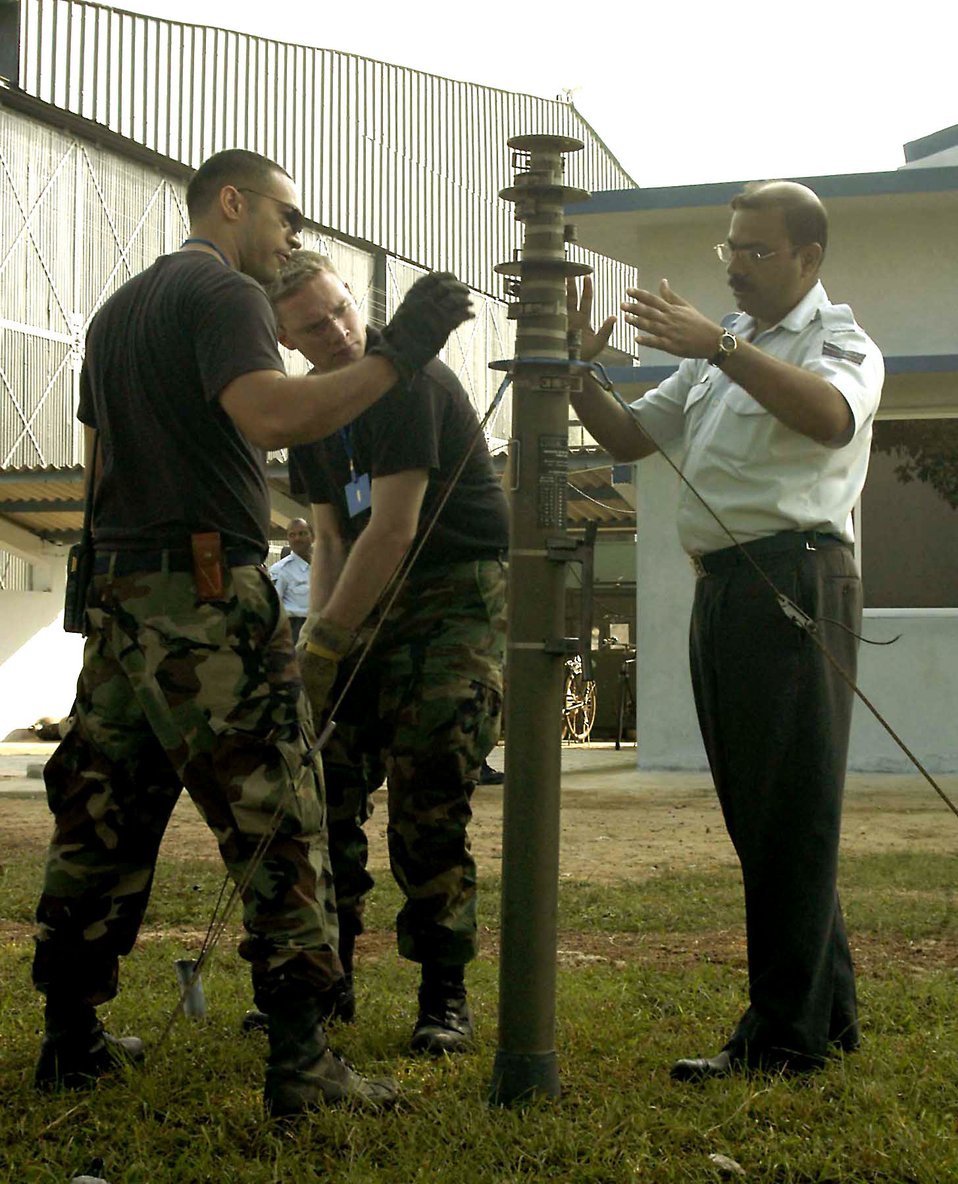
Antenna

KALAIKUNDA AIR STATION, India -- Staff Sgt. Alan Pickford, Satellite Communications Specialist, tightens a guide wire on an antenna base as Staff Sgt. Eric Uptegrove, Airfield Maintenance Specialist, explains to Indian air force Sergeant Karmakar how to set up the antenna which will be used as the base station by the maintenance operations center. Both Sergeants Uptegrove and Pickford are deployed from the 35th Communications Squadron in support of exercise Cope India '06.